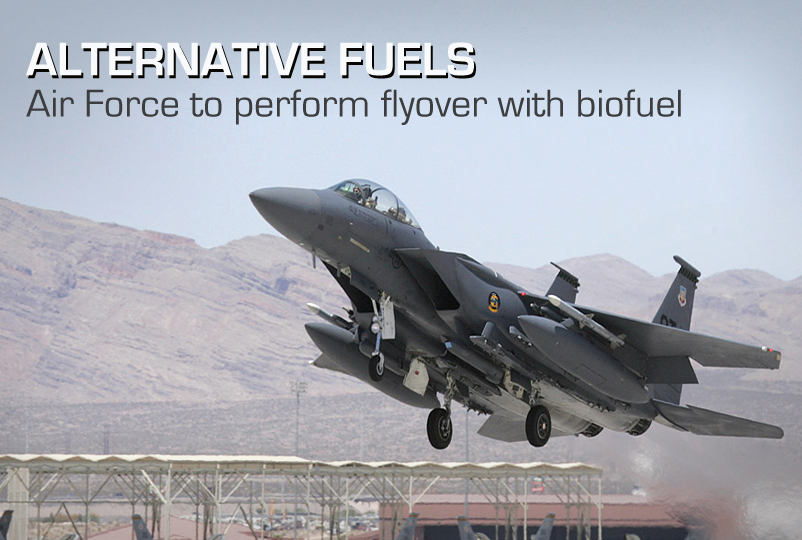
Alternative Fuels